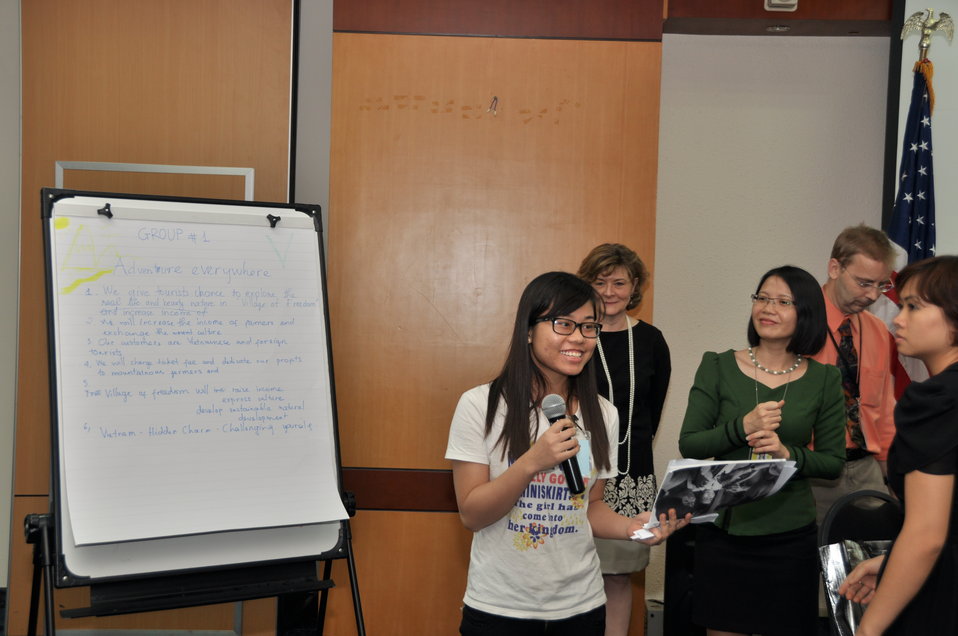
Vietnamese university students join the Business Plan Mashup exercise

Photo: @USAIDVietnam, November 16, 2012